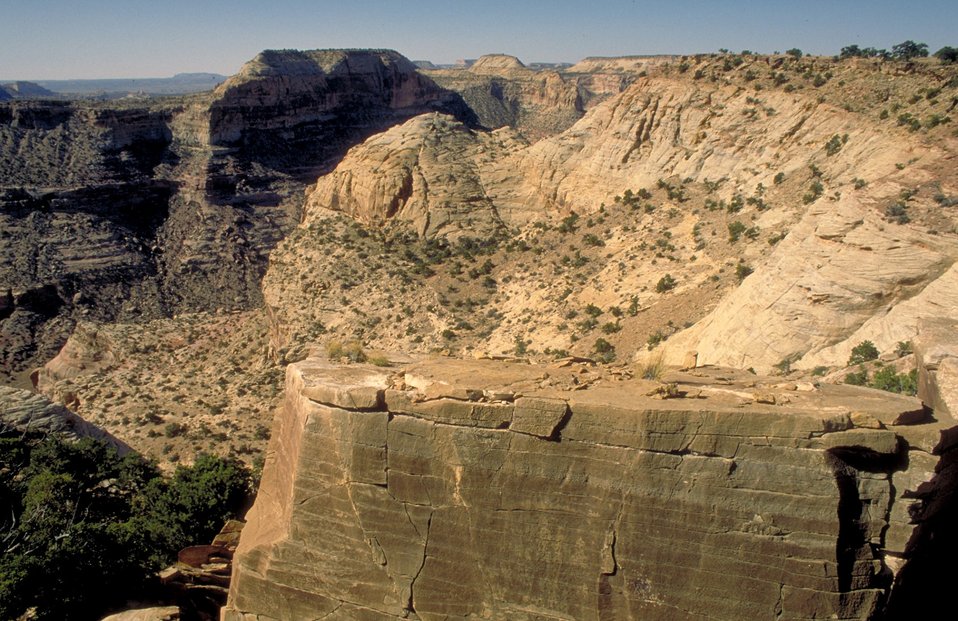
The Wedge Overlook, San Rafael Swell.